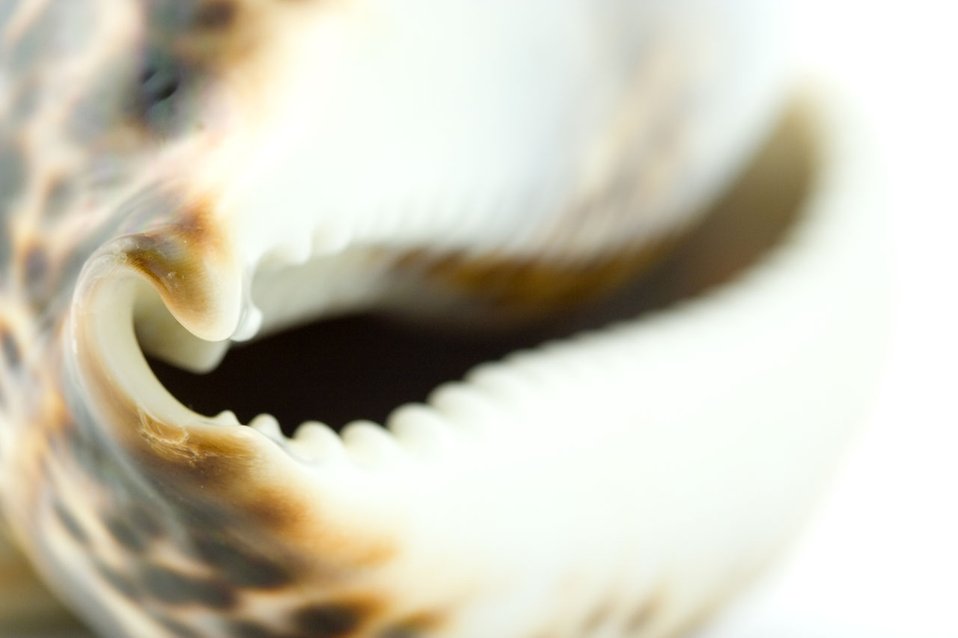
Seashell

Macro photo of a seashell.